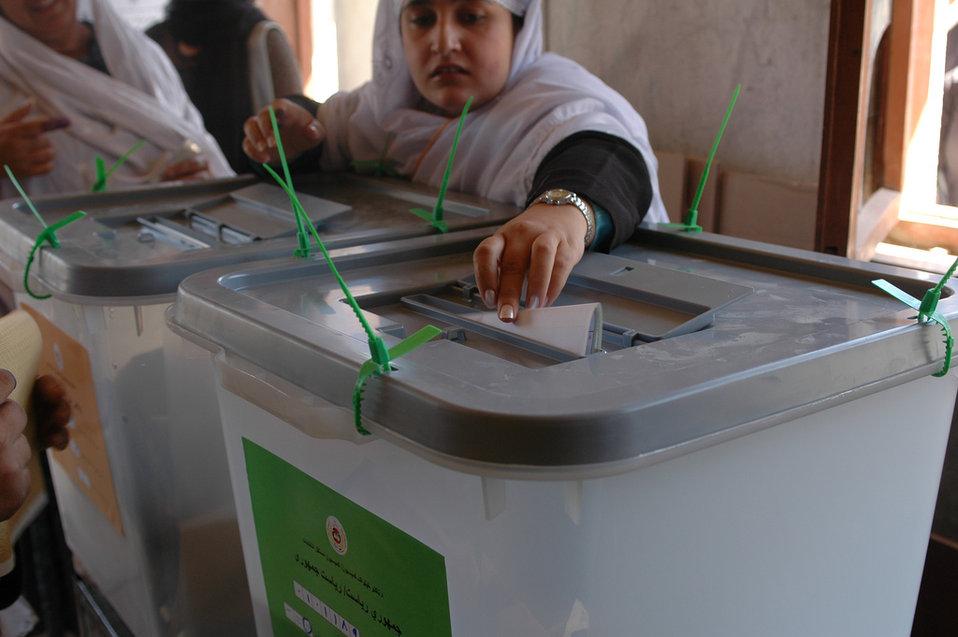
woman voting